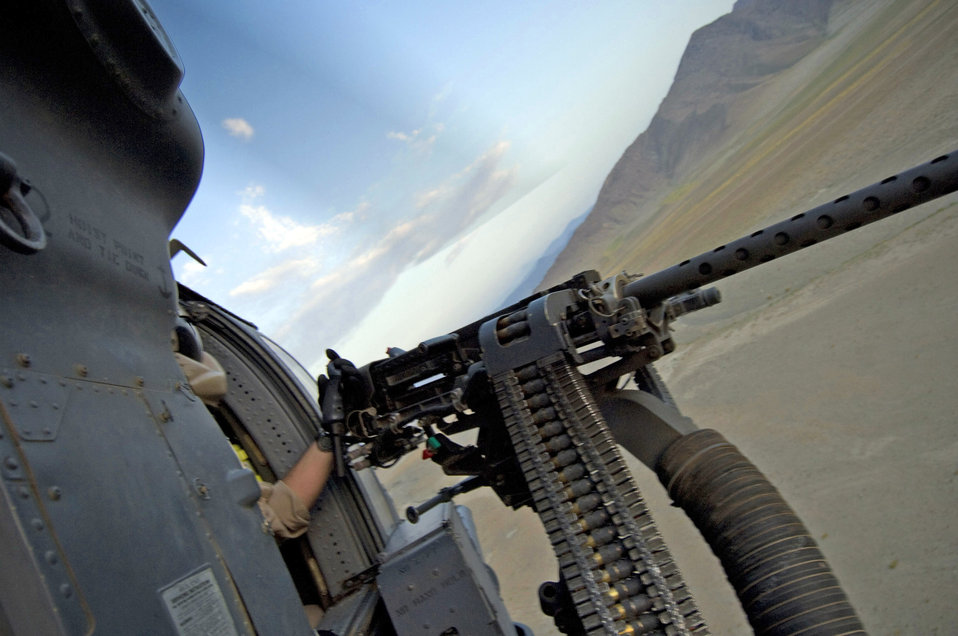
Flying with the Pave Hawks

Staff Sgt. Gerald Messier checks out the 50-caliber machinegun on an HH-60G Pave Hawk Aug. 2 at Bagram Air Base, Afghanistan, during a training flight. Sergeant Messier is a 33rd Expeditionary Rescue Squadron flight engineer at Bagram, and is deployed from the 33rd Rescue Squadron at Kadena AB, Japan.